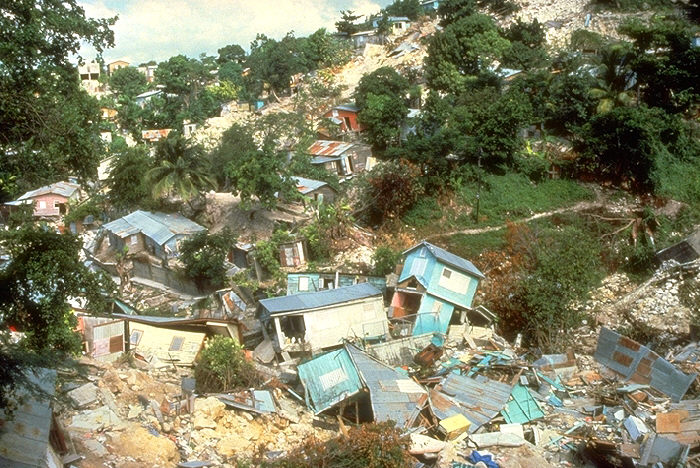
Aftermath of mudslide, Puerto Rico.